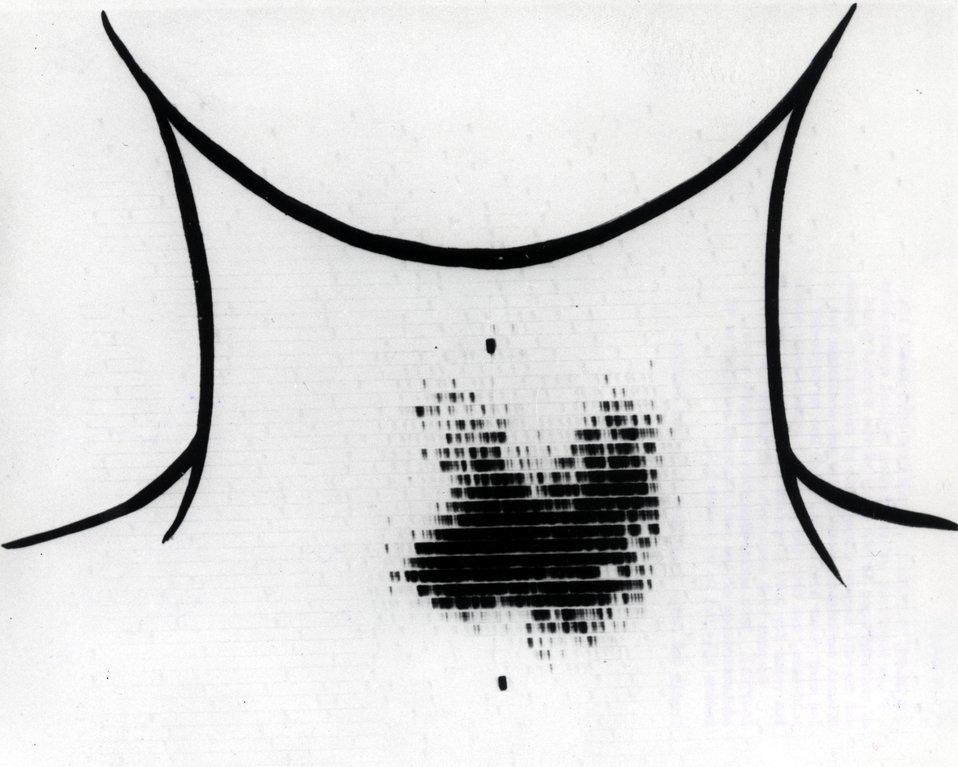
An important and continuing medical application of radioisotopes is the study ot the thyroid gland and thyroid cancer through use of radioactive iodine. c. 1966